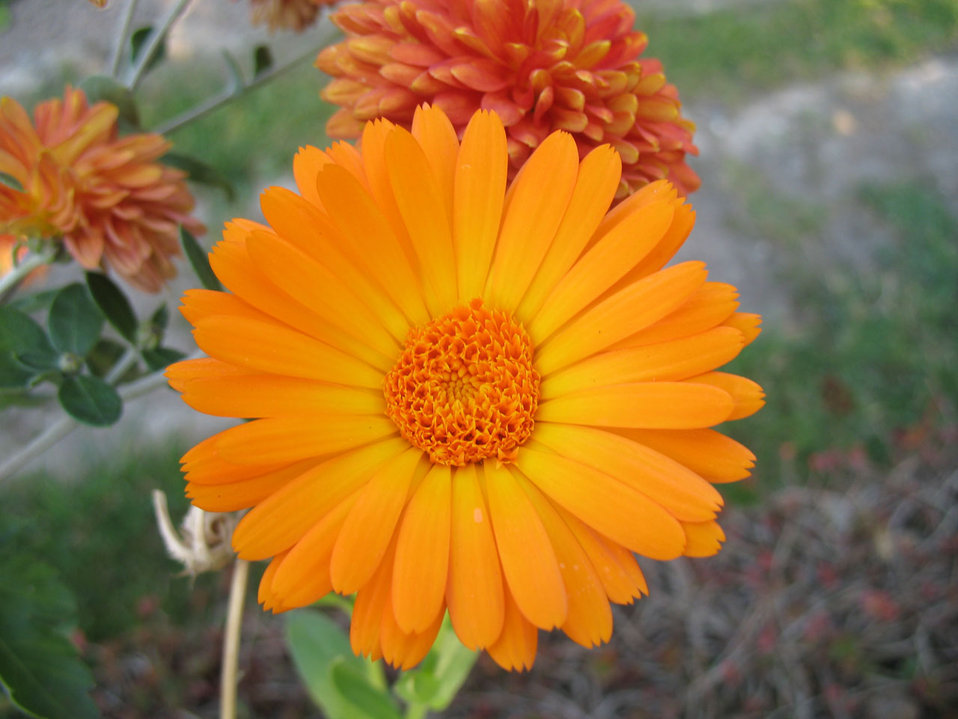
Pot marigold - calendula officinalis.